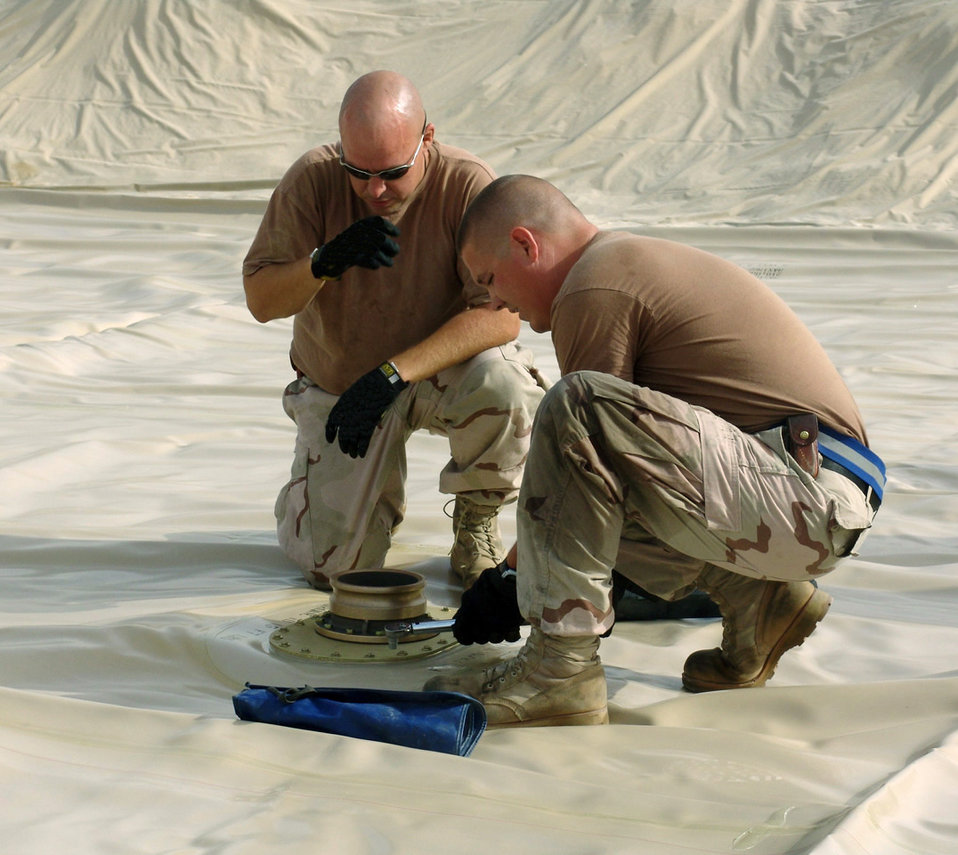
Bladder control

SOUTHWEST ASIA -- (From left) Staff Sgts. Corey Kotek and Ron Casey tighten the fittings on a new fuel bladder at a deployed location here before filling it. Both sergeants are assigned to the 386th Expeditionary Logistics Fuels Flight. The flight is responsible for fueling both motor vehicles and aircraft for the 386th Air Expeditionary Wing.